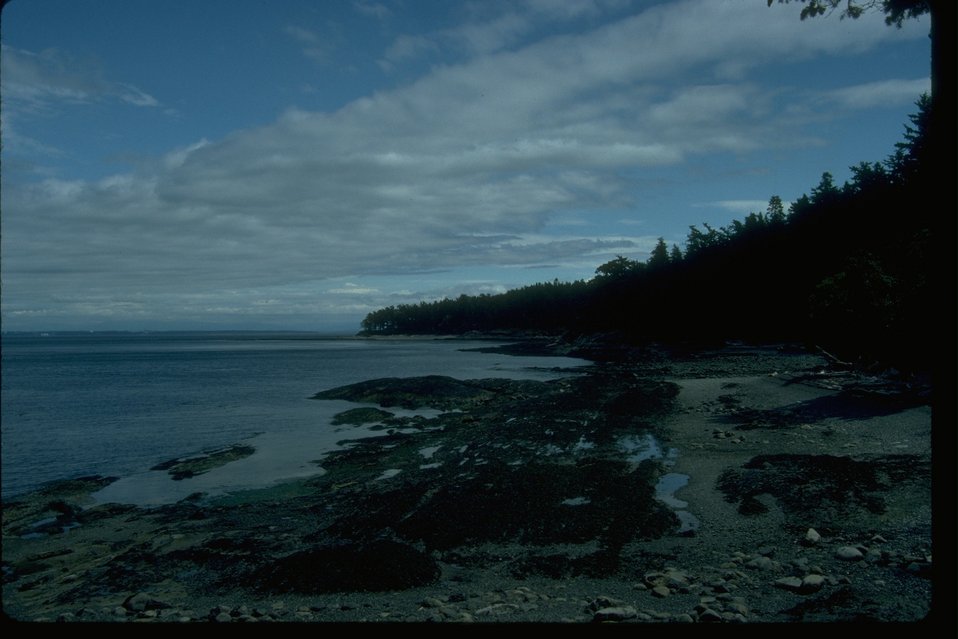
Patos Island in San Juan County, Washington.